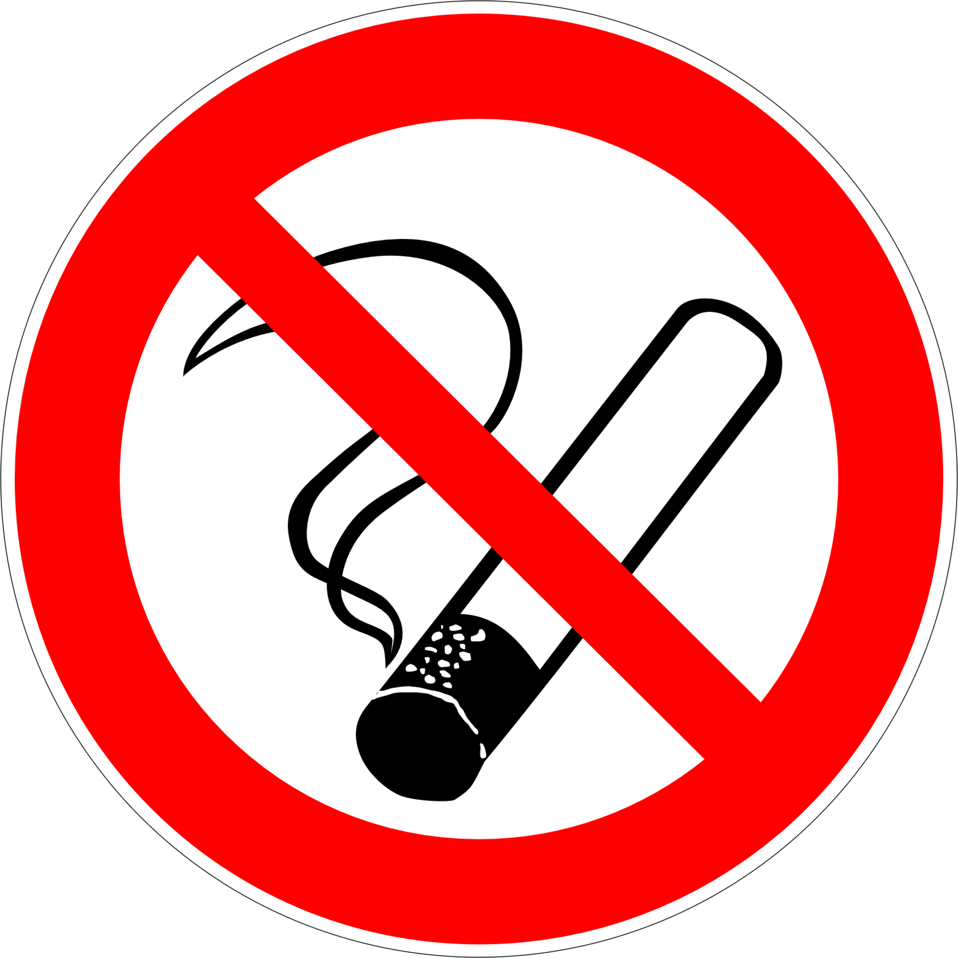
Deutsch: Rauchen verboten, Verbotszeichen D-P001 nach DIN 4844-2 Smoking prohibited, prohibition sign D-P001 according to German standard DIN 4844-2 Русский: Знак запрета курения